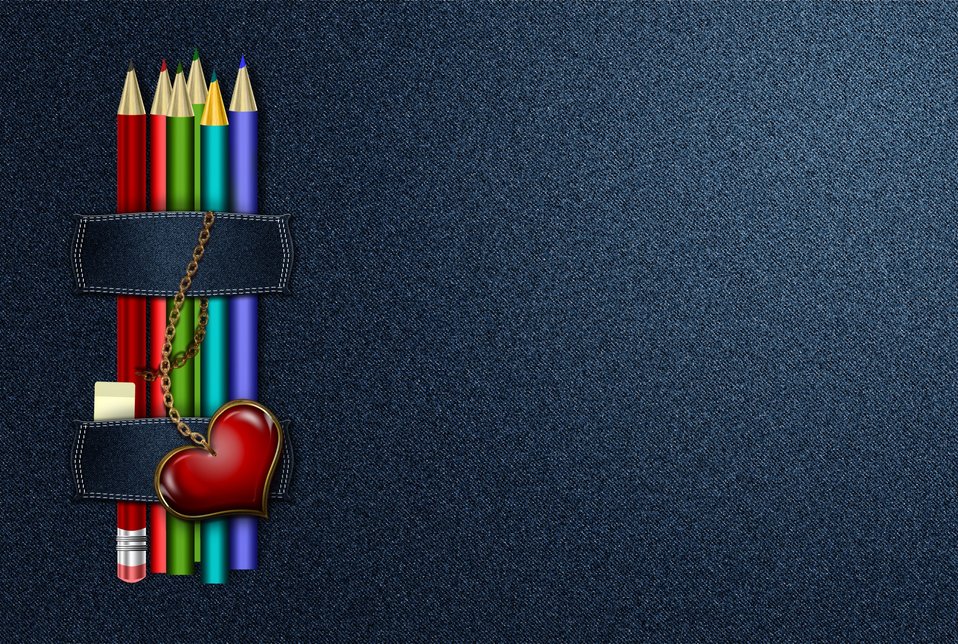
Jeans background with pencils

Jeans background with colored pencils.